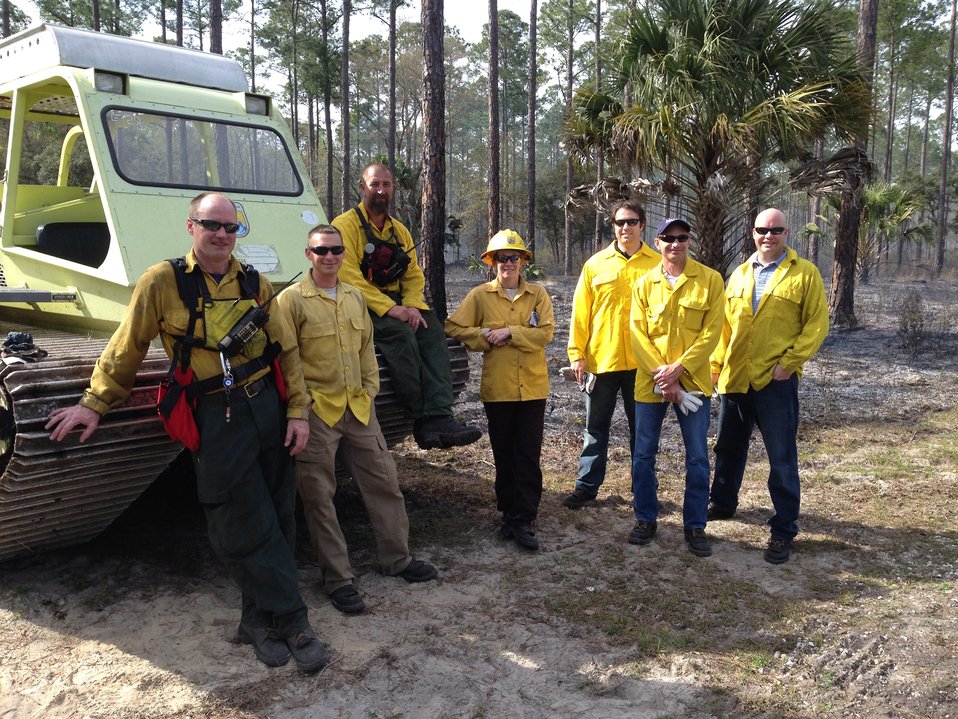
Lower Suwannee Firecrew; Larry Woodward, Anthony DiMaggio, George Pelt, and Jaclyn Solodovnick, along with NWS Emergency Response Meteorologists and Fire Weather Forecasters Rick Davis, Todd Barron, and Jon Jelsema at a demonstration prescribed burn on the Lower Suwannee NWR